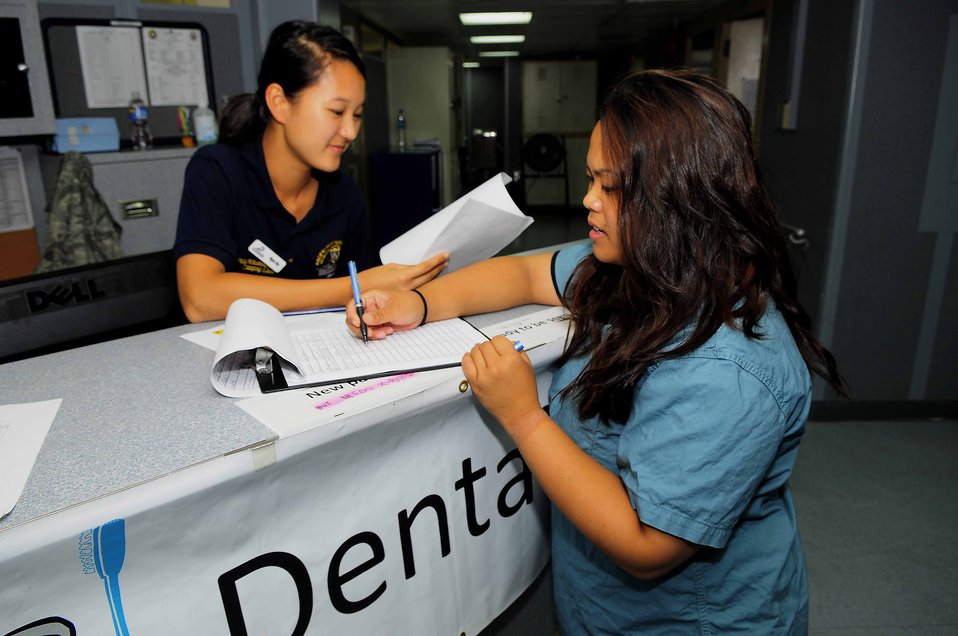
Ngoc Bui and Maureen Malingkas Work in the Dental Department

Ngoc Bui and Maureen Malingkas, volunteers with University of California, San Diego Pre-Dental Society, work in the dental department aboard the Military Sealift Command hospital ship USNS Mercy (T-AH 19) in support of Pacific Partnership 2010 operations in Ambon, Indonesia, on July 27, 2010. Mercy is in Ambon participating in Sail Banda 2010, a series of events hosted by the Government of Indonesia to promote the future of small islands. Mercy’s participation features medical and dental care clinics and construction projects in and around Ambon, as well as on Seram Island.